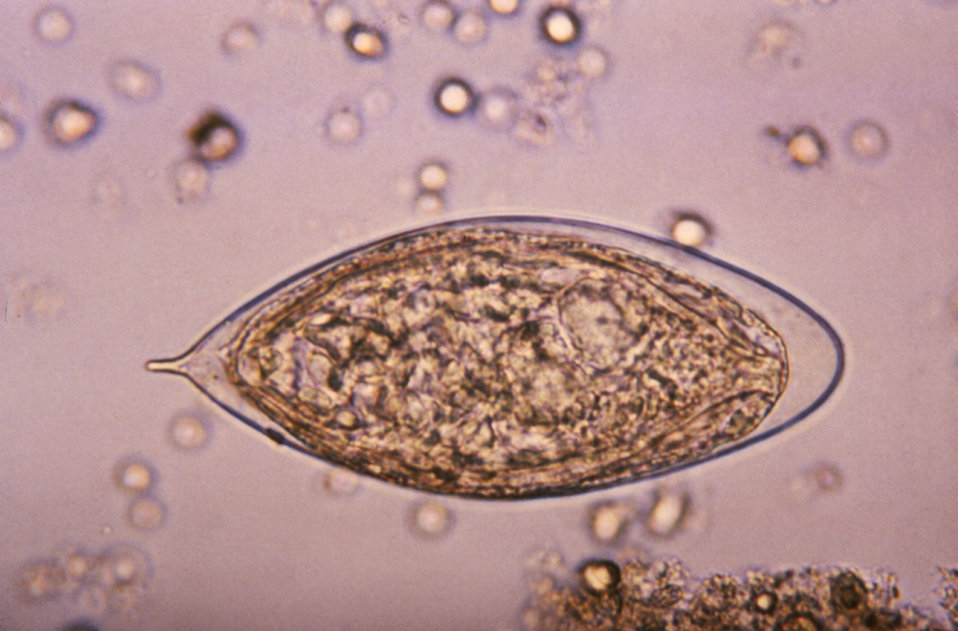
This micrograph depicts an egg from a Schistosoma haematobium trematode parasite; magnified 500x. Note the egg's posteriorly-protruding, terminal spine, unlike the spinal remnant, which protrudes from the lateral wall of the Schistosoma japonicum egg.